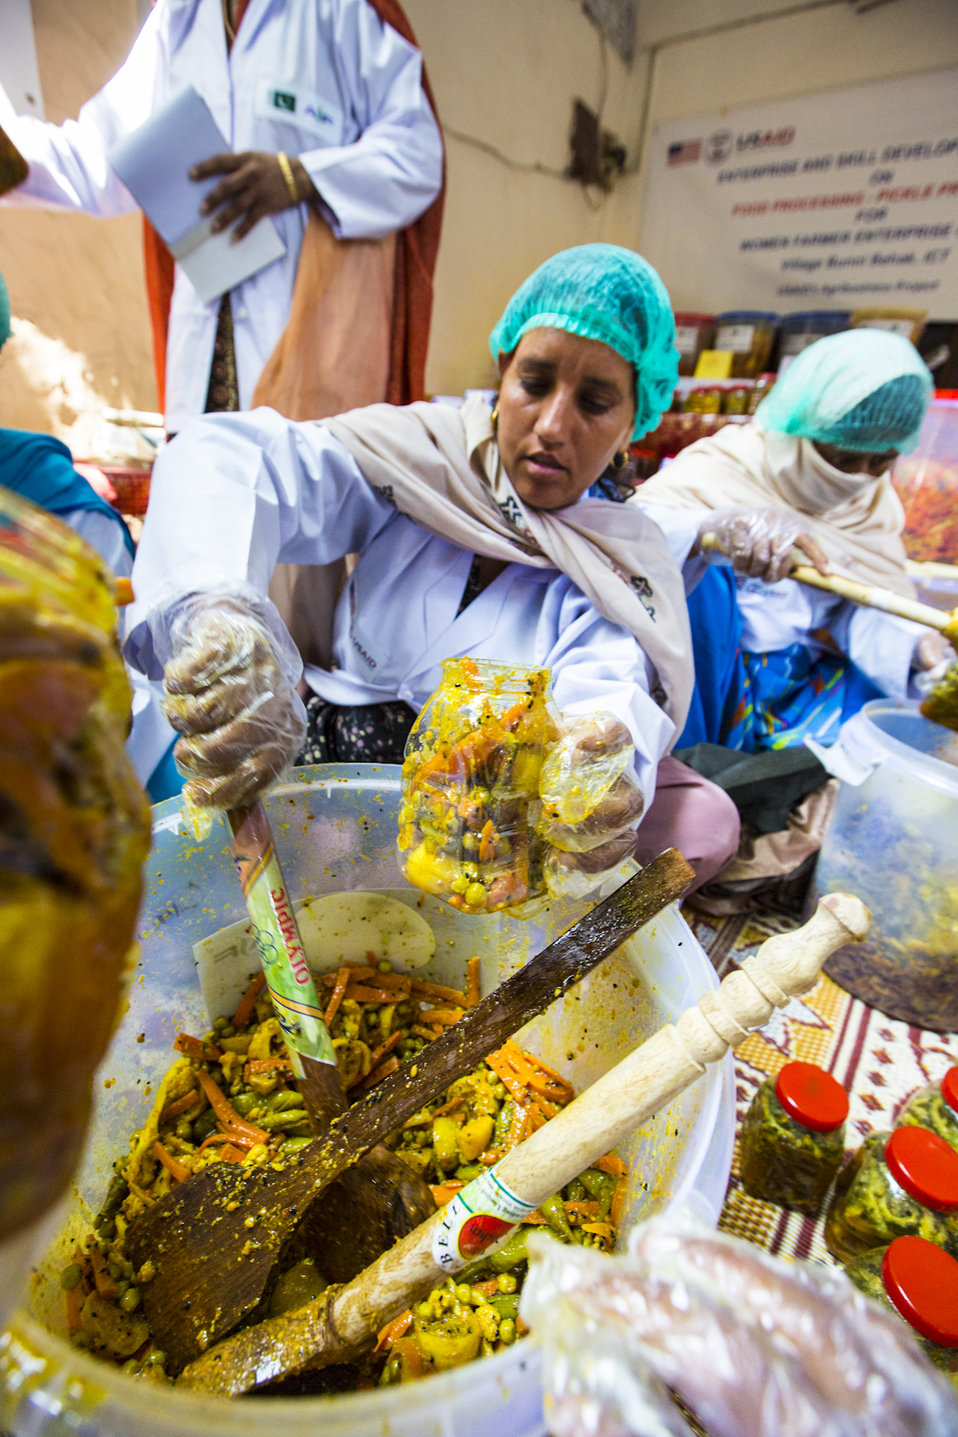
USAID's Agribusiness Project Women FEG for Food Processing - Pickle Production at Village Jabbi

The group is diverse. From their 20s to their 50s, some of the women are married, while some are single.
www.usaid.gov/pk/db/sectors/growth/project 750.html